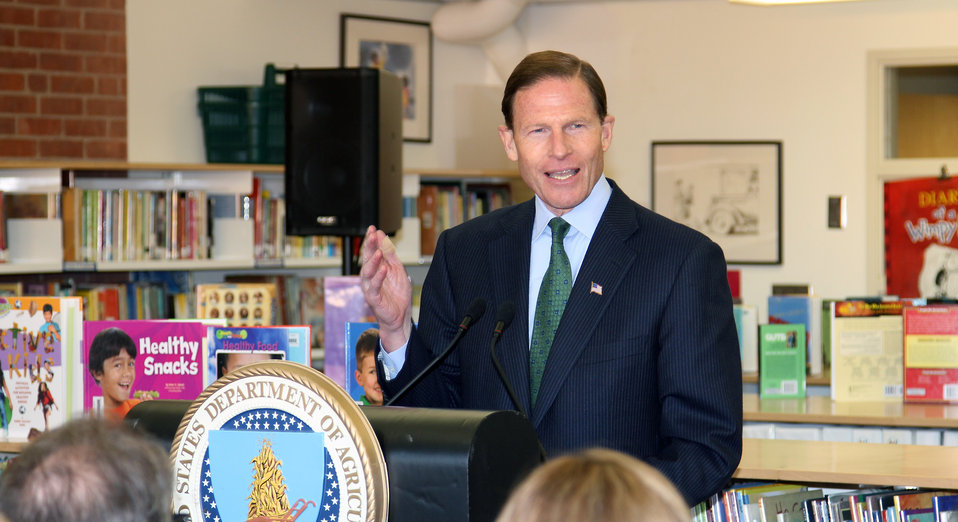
Senator Richard Blumenthal speaks during Secretary Vilsack’s visit to the Henry A. Wolcott Elementary School in West Hartford, Connecticut to outline the U.S. Department of Agriculture (USDA) efforts to raise a healthier generation of Americans on Friday, April 5, 2013.